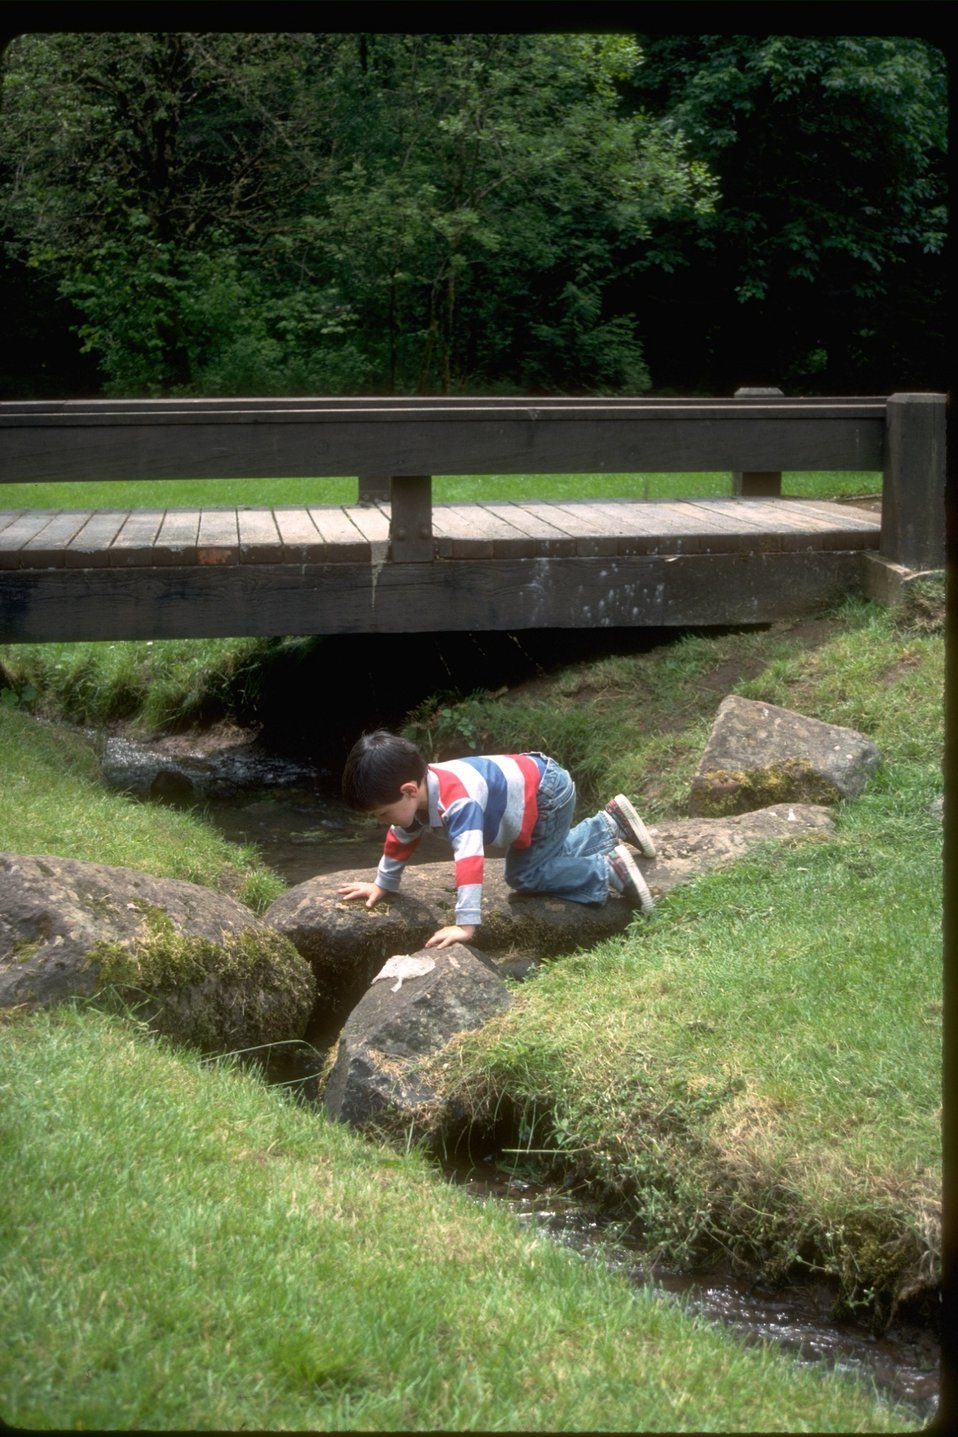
Child explores Shotgun Park along bank of brook.